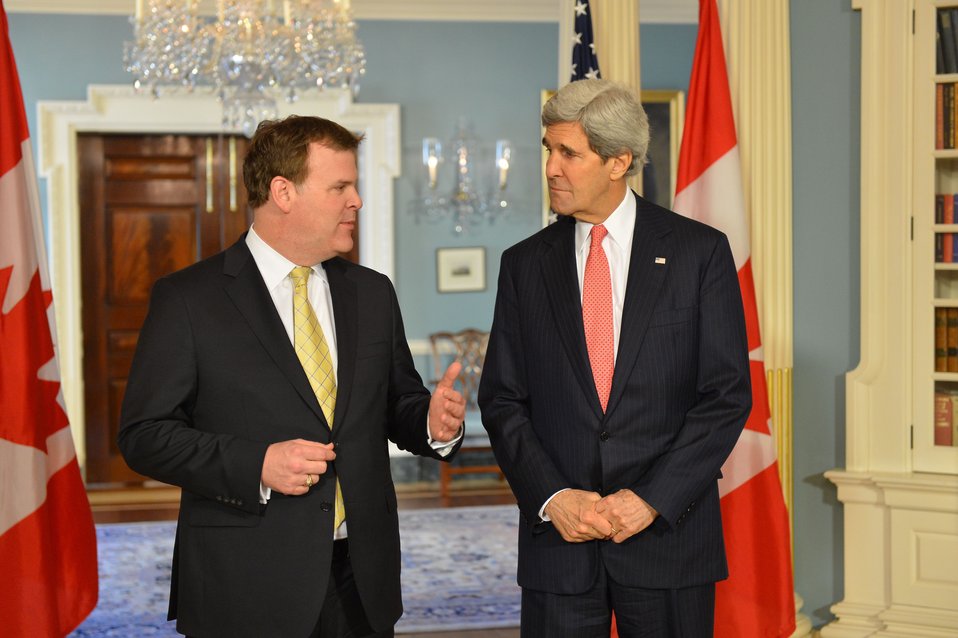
Secretary Kerry and Canadian Foreign Minister Baird Address Reporters

U.S. Secretary of State John Kerry and Canadian Foreign Minister John Baird address reporter after their bilateral meeting as part of the North American Trilateral Ministerial at the U.S. Department of State in Washington, D.C., on January 17, 2014.